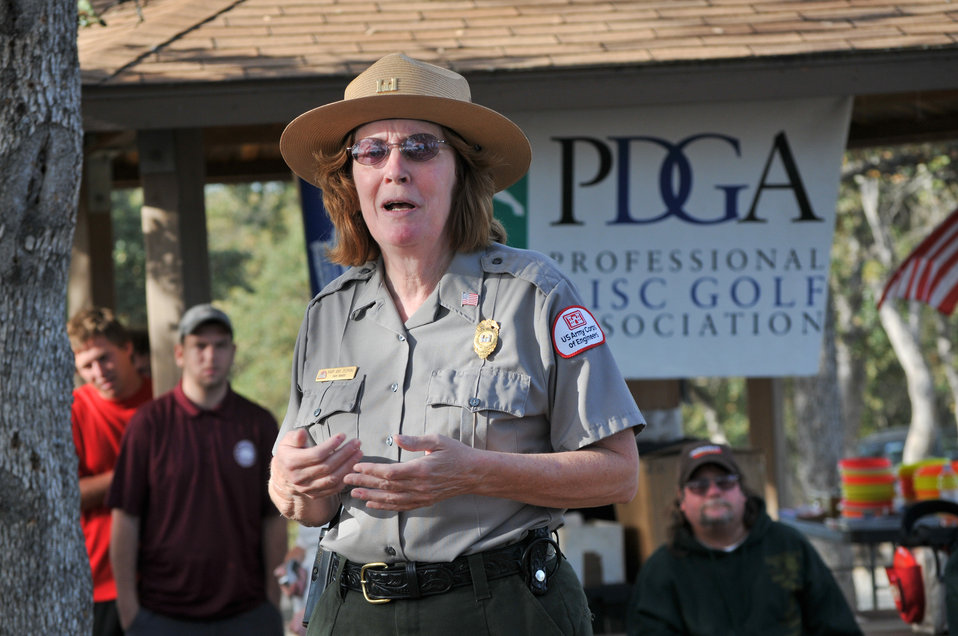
BLACK BUTTE LAKE, Calif. (Oct. 18, 2010) – Black Butte Lake park ranger Mary Ann Deeming welcomes more than 150 disc golfers from as far as Texas to the Professional Disc Gold Association's Norcal Series Championships here Oct. 16. Black Butte hosted the tournament Oct. 15-17 at its new disc golf course, built on park lands by The Orland Aces disc golf club under a partnership with the Corps.